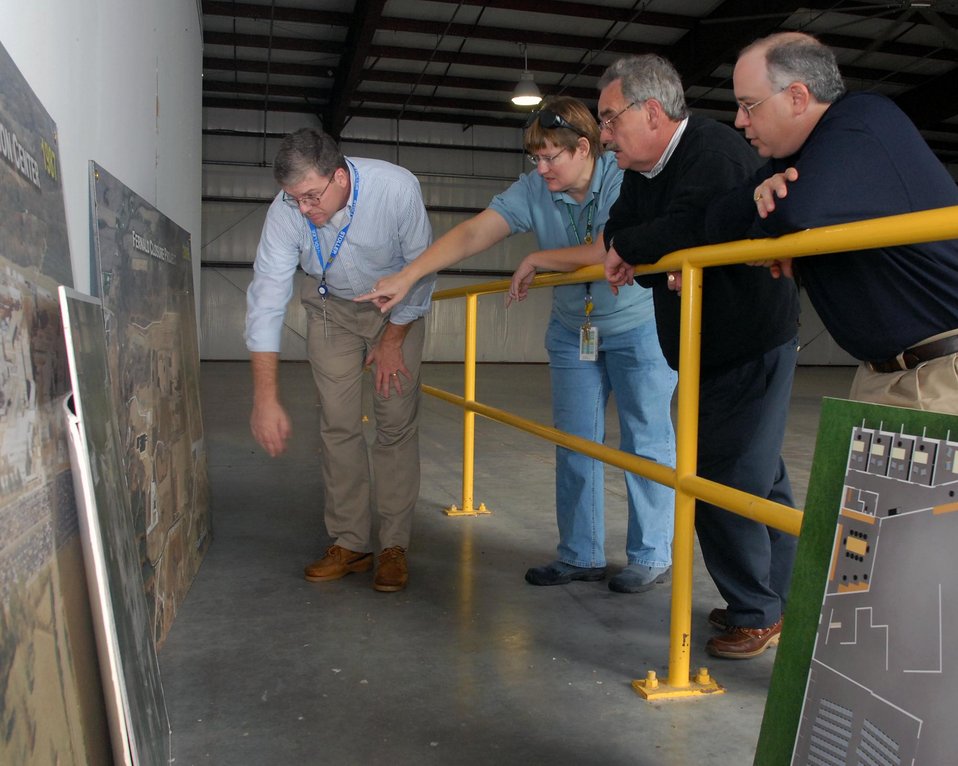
From left, Frank Johnston, S.M. Stroller site manager, Jane Powell, U.S. Department of Energy (DOE )-Fernald Preserve site manager, and Michael Owen, director of the DOE Office of Legacy Management, discuss plans for the construction of the Fernald Preserve Visitor Center.